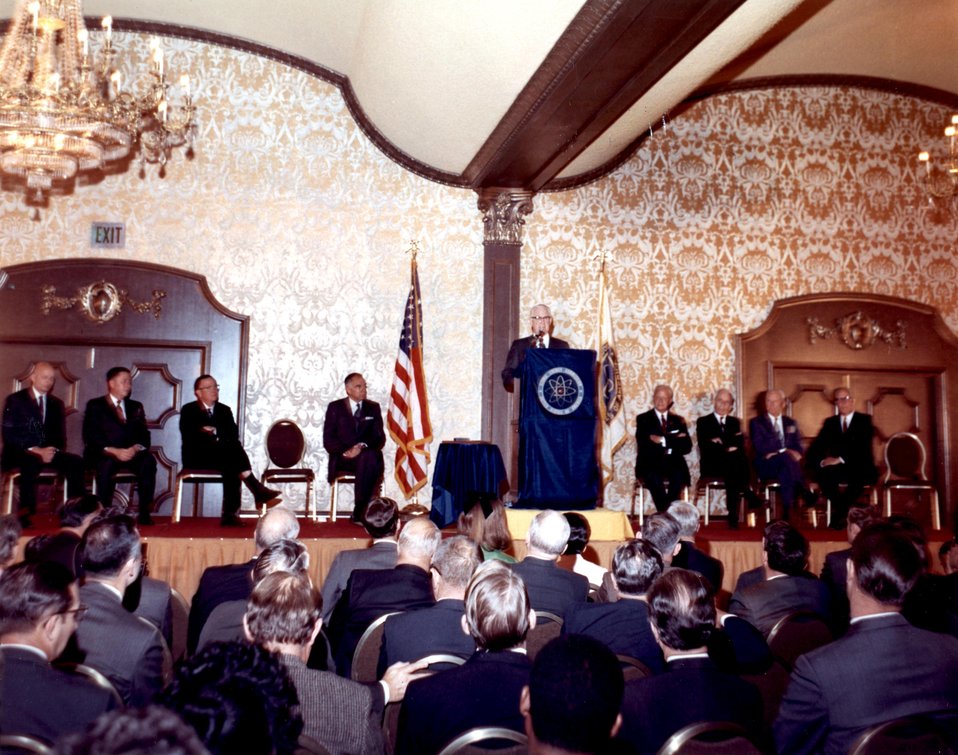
Enrico Fermi Award Ceremony. Imperial Ballroom. San Fransisco Hilton Hotel. 5:30 p.m., December 2, 1969. Fermi Award. Recipient: Walter Zinn. Date: Dec. 2, 1970.